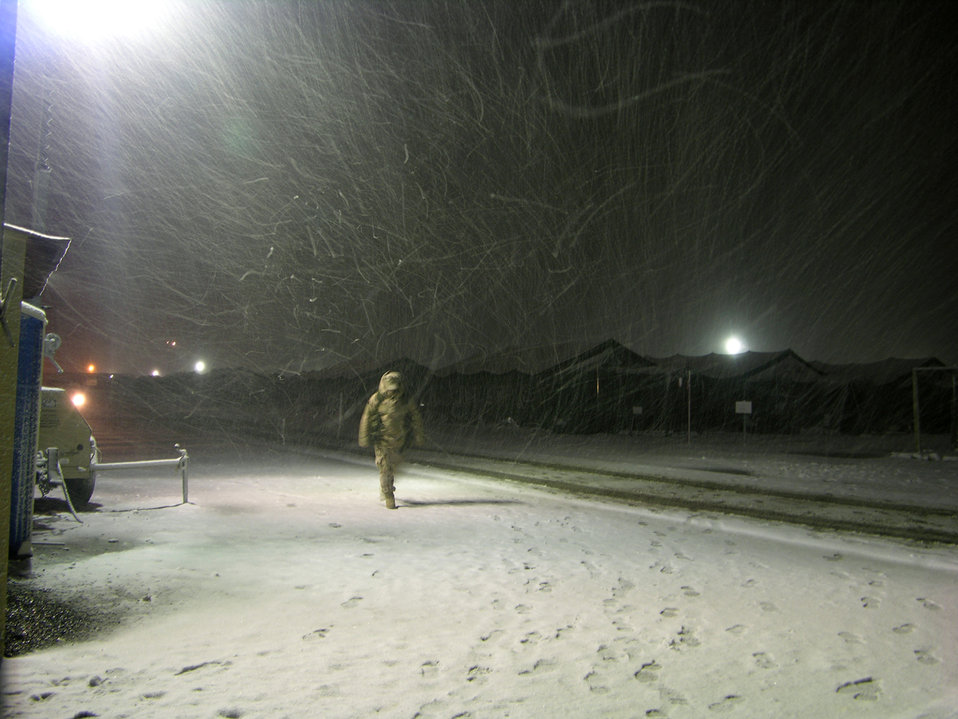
Weather outside is frightful

MANAS AIR BASE, Kyrgyzstan -- A 376th Expeditionary Security Forces Squadron Airmen braves the cold on his way to work during a snowstorm here Dec. 3. The squadron's Airmen ensure the safety of the air base and its assets supporting the war on terrorism.